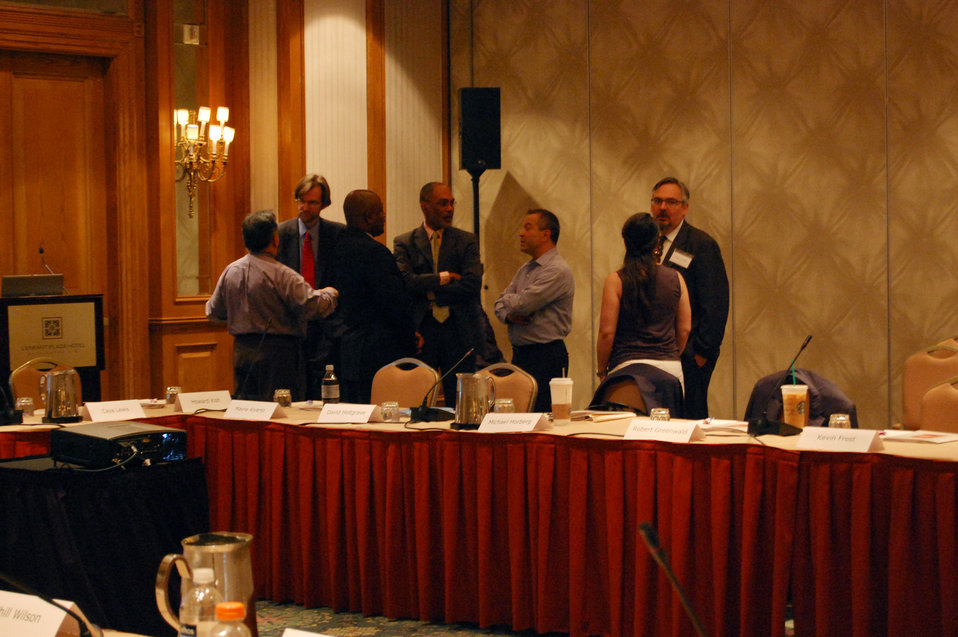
PACHA conf014